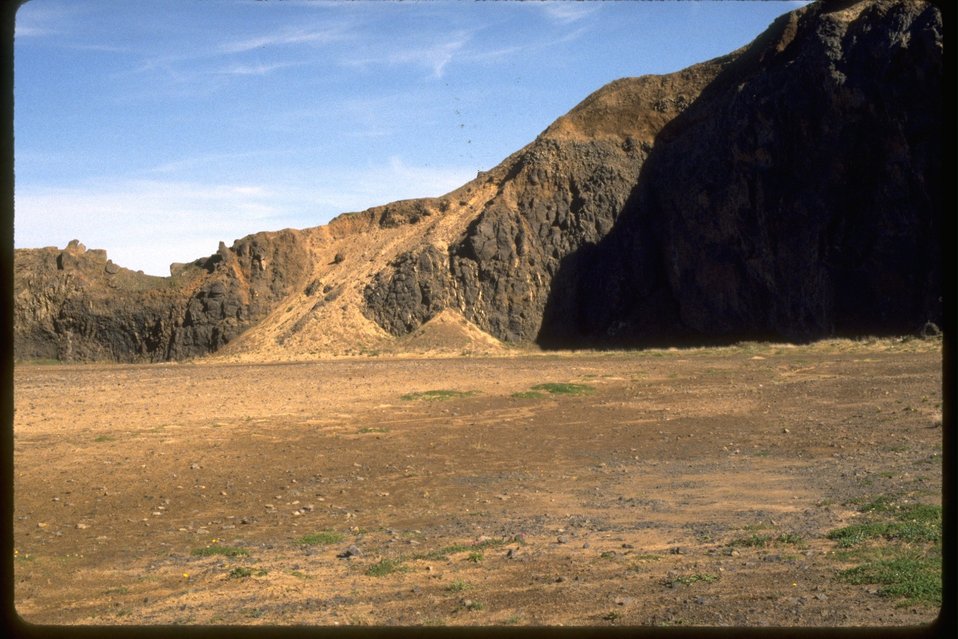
Preconstruction of the interpretive center at Upper Quarry.